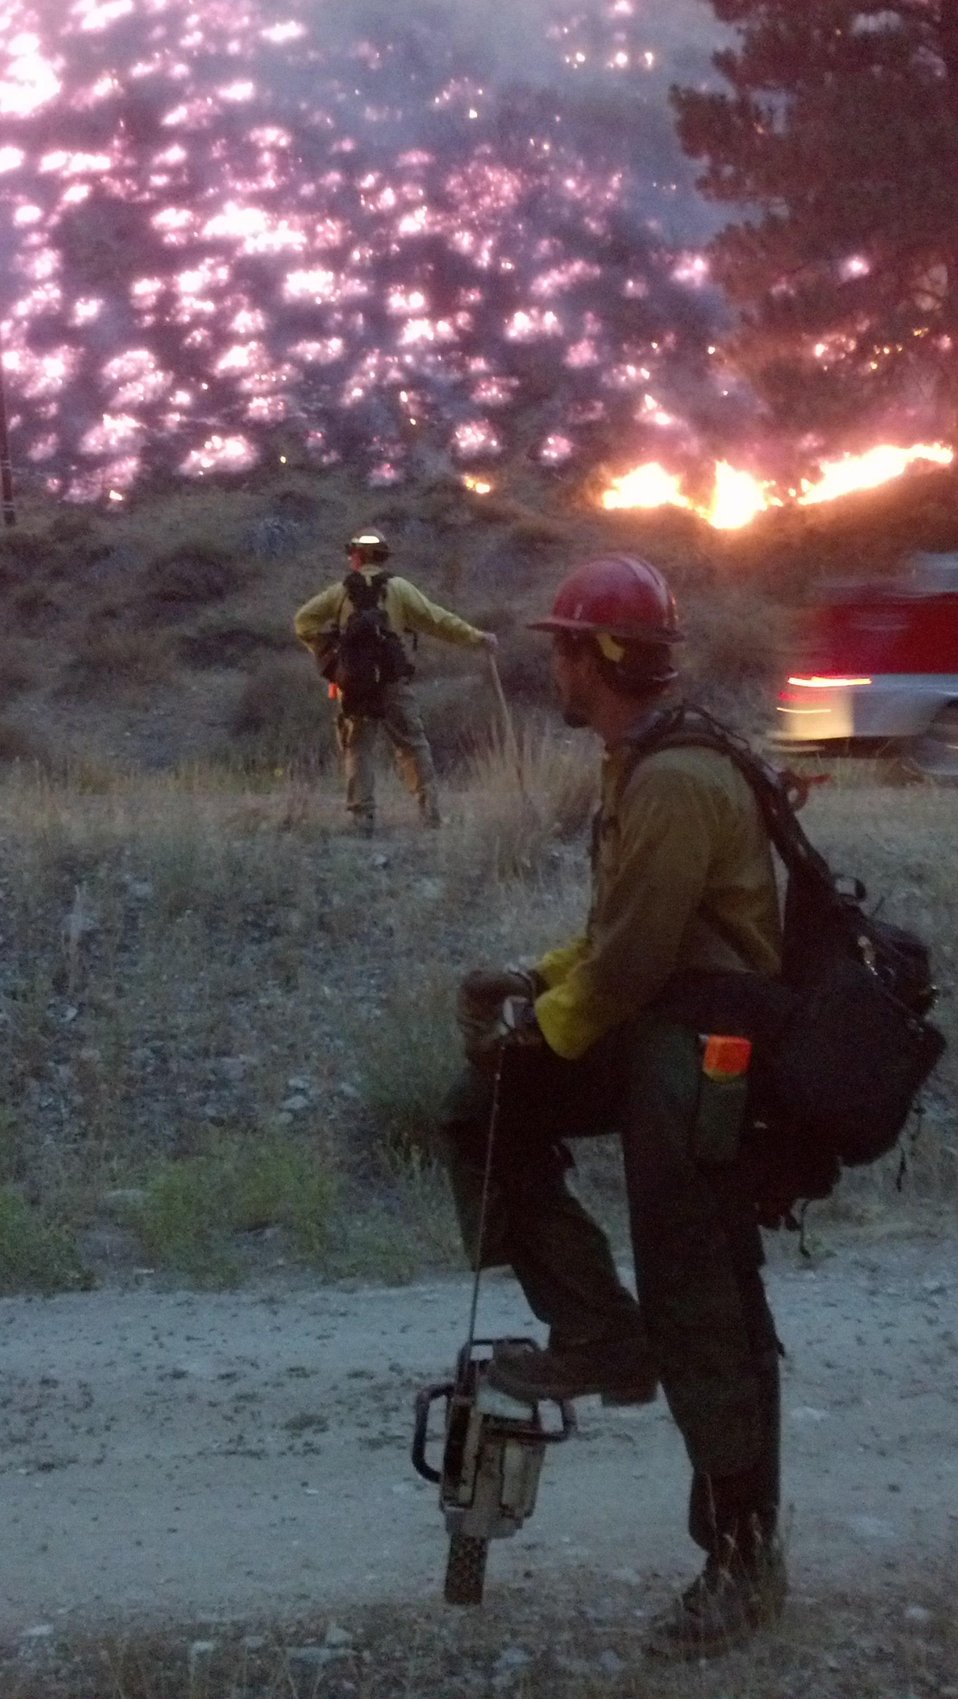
Firefighters hold the perimeter of the Elk Complex Fire. The Elk Complex Fire in the Boise National Forest near Pine, ID began on Aug. 08, 2013 by lightning has consumed approximately 111,977 acres and is approximately 10% contained.